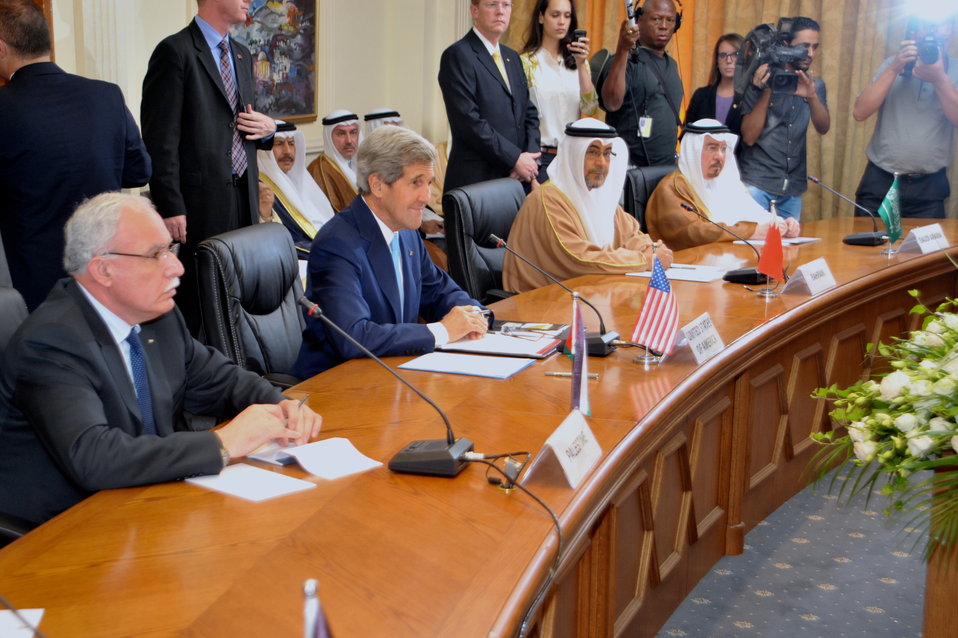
Secretary Kerry Meets With Arab League Members

U.S. Secretary of State John Kerry sits with members of the Arab League Peace Initiative before a meeting in Amman, Jordan, on July 17, 2013.